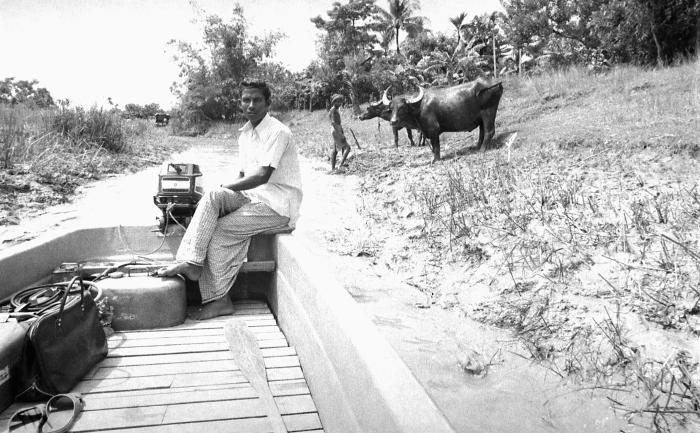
This image depicted a Bangladesh man while riding a motorboat along a shallow rivulet. In the background stands a farmer with two water buffalo. With its flat bottom, the motorboat can maneuver in very shallow water, which made it quite useful transporting supplies and human resources very efficiently from village to village. This photograph provided by Dr. Stan Foster, and captured by Pierre Claquin, M.D., B.A.C., who at the time was a member of the World Health Organization's Smallpox Eradication Program. It was part of a series photographed by former E.I.S. officer, Stanley O. Foster M.D., M.P.H., and was one of a series entitled 'The Story of One Smallpox Jeep', which depicted the travails faced by the jeep, and its occupants of public health practitioners, as they road through the Bangladesh countryside in an attempt to eradicate smallpox from the country.